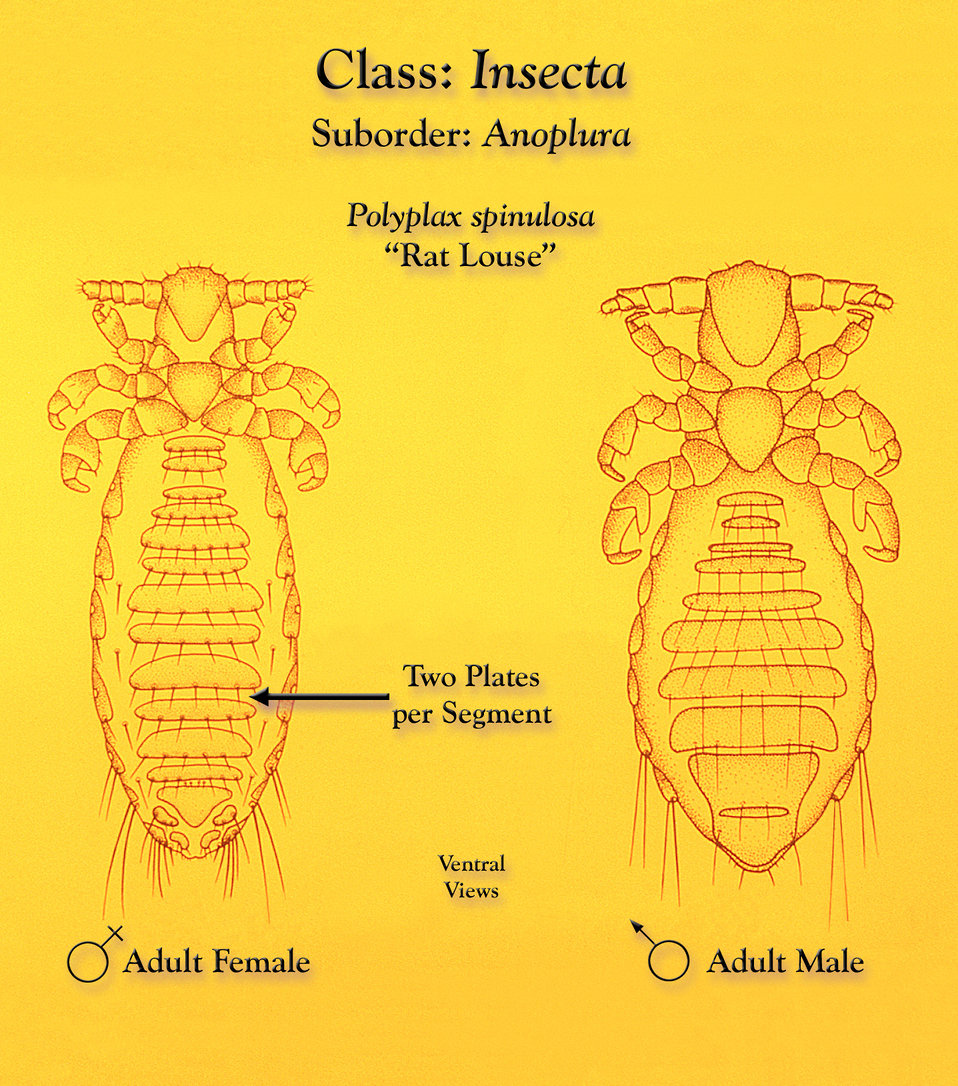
This illustration depicts a female (Lt) and male (Rt) 'rat louse', Polyplax spinulosa from a ventral view.